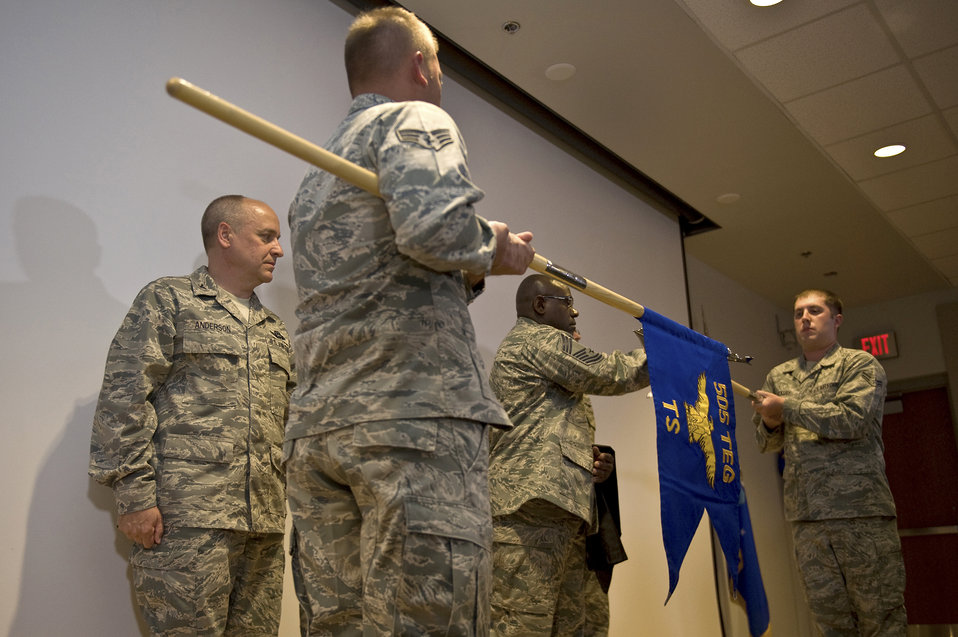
Activation 505th TEG

Airmen case the 505th Operations Squadron guidon during a redesignation ceremony April 5, 2011, at Nellis Air Force Base, Nev. The 505th Operations Group and 505th Operations Squadron became the 505th Test and Evaluation Group and 505th Test Squadron during the ceremony.